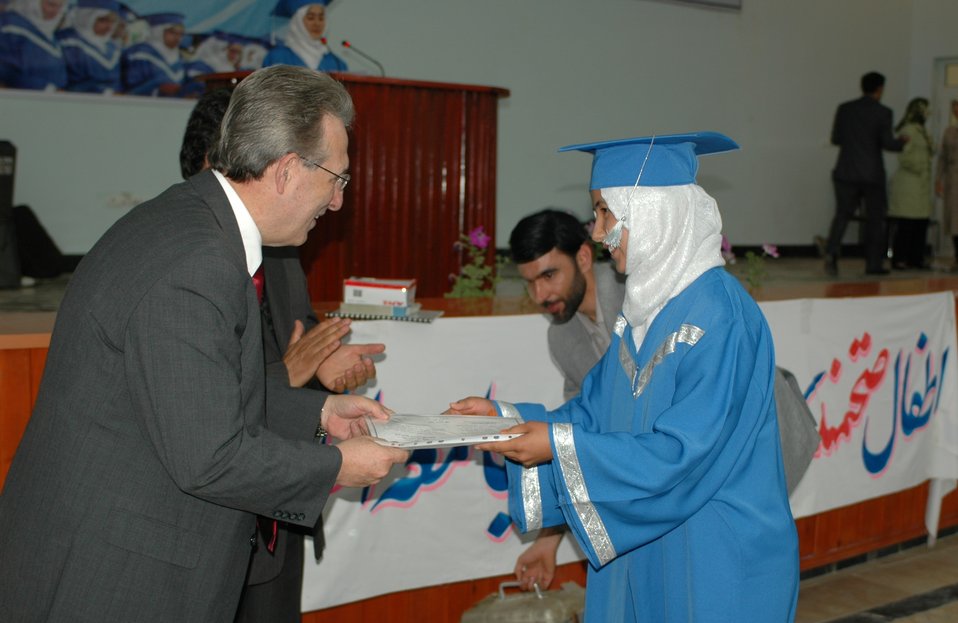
Midwifery5